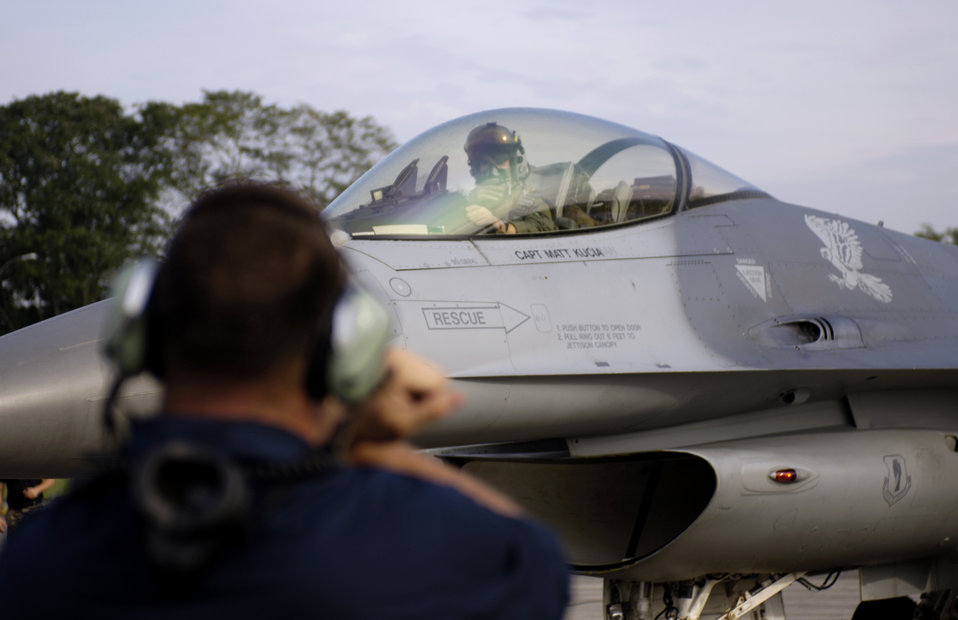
Commando Sling

PAYA LEBAR AIR BASE, Singapore -- Staff Sgt. Keith White prepares to launch his F-16 Fighting Falcon for a mission Paya Lebar Air Base, Singapore, during Exercise Commando Sling. The annual exercise began in 1990 to provide combined air combat training for U.S. Air Force and Singapore Air Force fighter units. The exercise enables units to sharpen air combat skills, improve procedures for sustained operations at a non-U.S. base, and promote closer relations between the two air forces and nations. Sergeant White is a crew chief from the 14th Fighter Squadron, 35th Fighter Wing, Misawa, Japan.